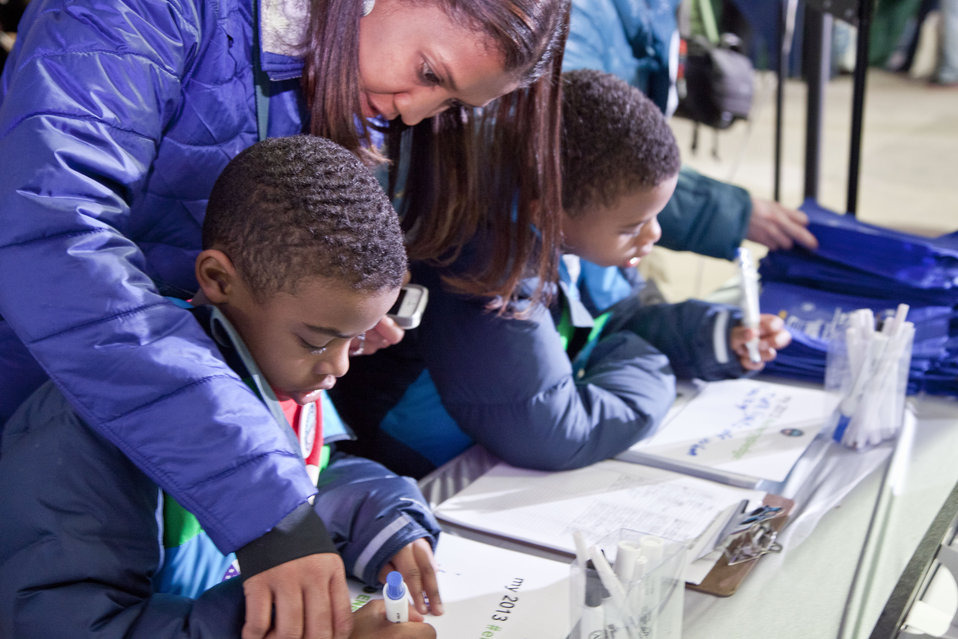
What's your #energypledge?